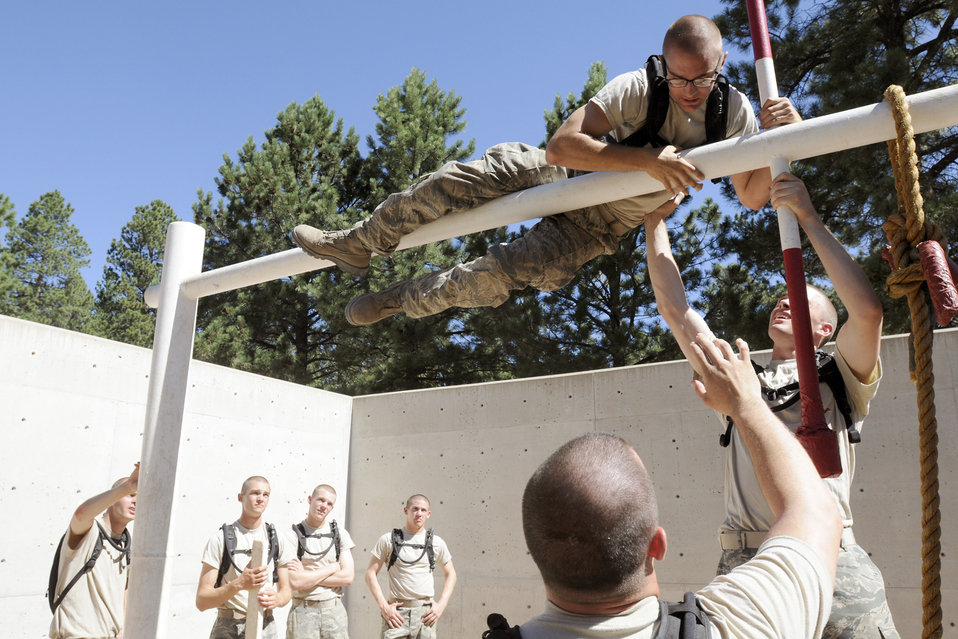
Cadets learn essential skills in Leadership Reaction Obstacle Course

Basic Cadet Matthew Bettis is helped up as he makes his way through one of 15 obstacles at the leadership reaction course at the U.S. Air Force Academy, Colo., July 16, 2010. The cadets learned essential problem solving and leadership techniques from the course.